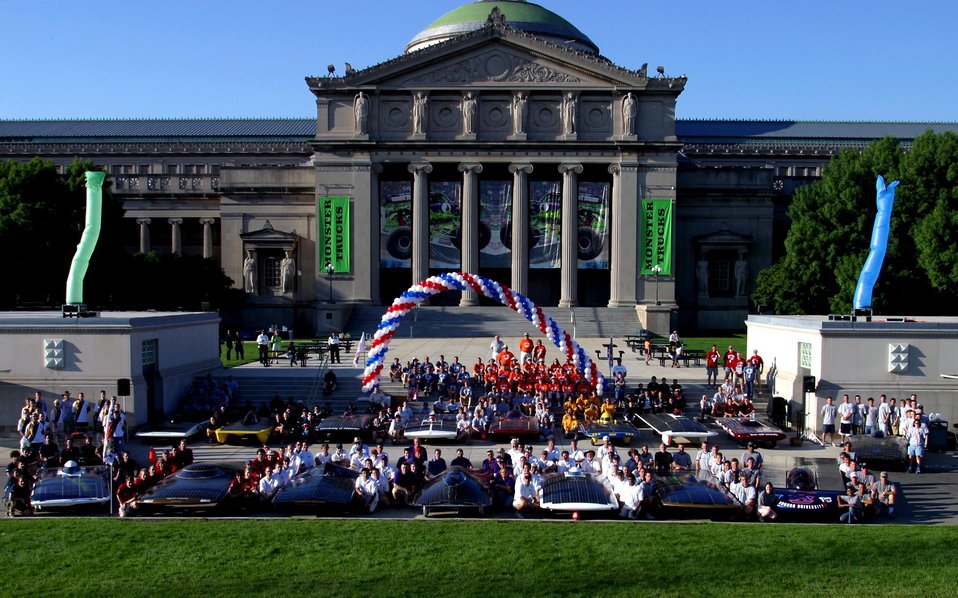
TEAMS IN FRONT OF THE MUSEUM OF SCIENCE AND INDUSTRY IN CHICAGO, ILLINOIS BEFORE START OF THE AMERICAN SOLAR CHALLENGE.

THE AMERICAN SOLAR CHALLENGE, THE LONGEST SOLAR CAR RACE IN THE WORLD, IS A DOE SPONSORED EDUCATIONAL EVENT IN WHICH TEAMS COMPETE TO BUILD AND RACE SOLAR-POWERED CARS. TWENTY UNIVERSITIES PARTICIPATED IN THIS YEAR'S EVENT WHICH STARTED IN CHICAGO, ILLINOIS ON JULY 13 AND FOLLOWED ROUTE 66 FOR 2300 MILES TO CLAREMONT, CALIFORNIA, ENDING ON JULY 23, 2003.